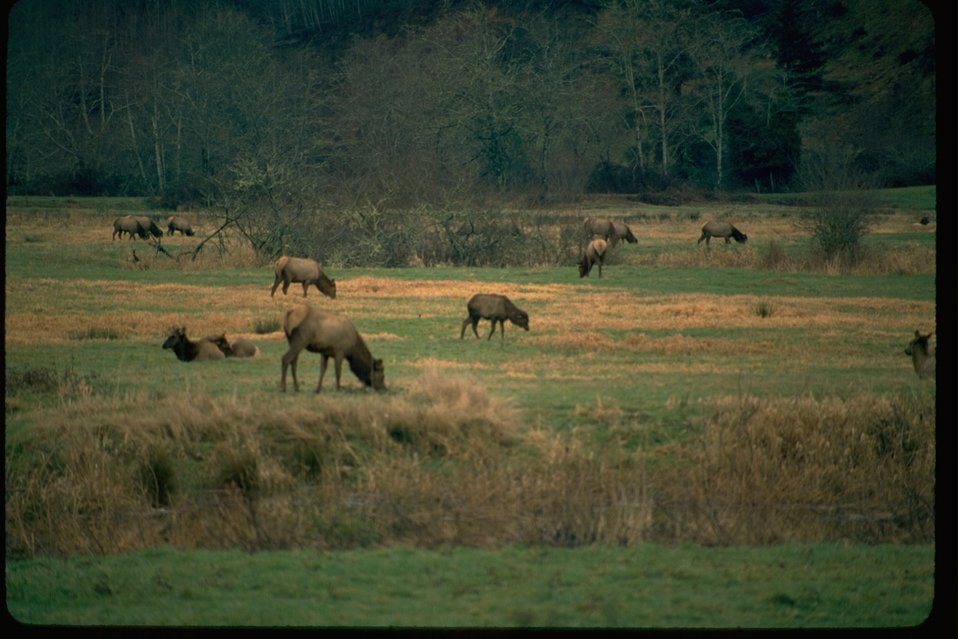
Elk grazing at Dean Creek.